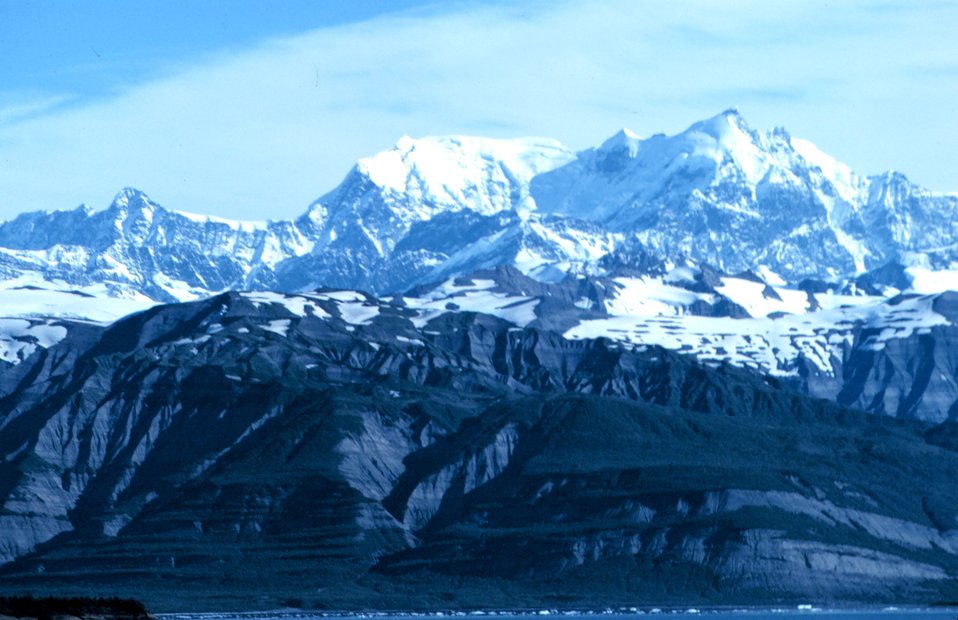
Tann Fjord area of Icy Bay.